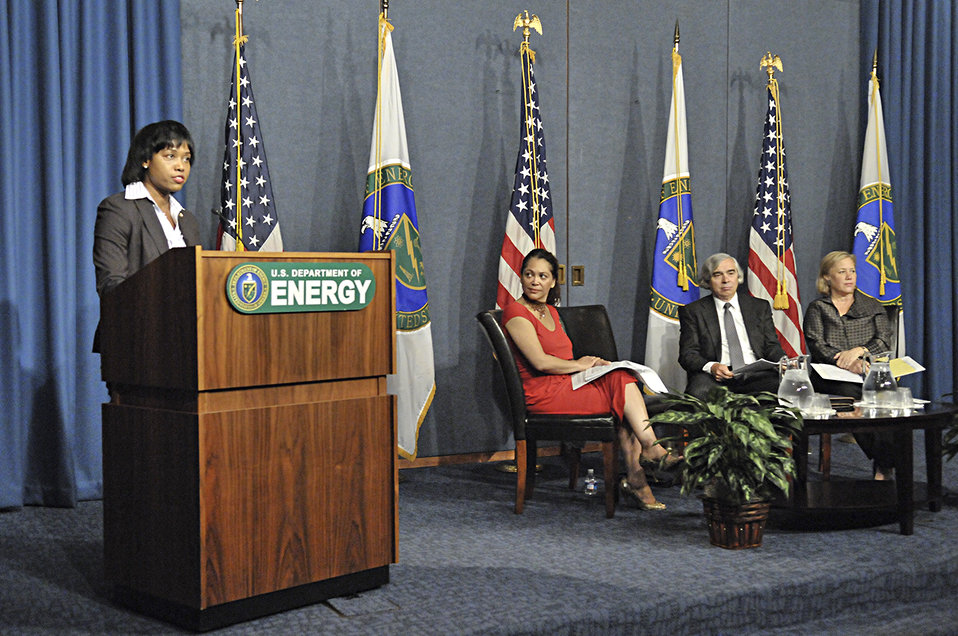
Launching the Minorities in Energy Initiative

Director Dot Harris introduces Senator Mary Landrieu at the Minorities in Energy Initiative launch on September 24, 2013.